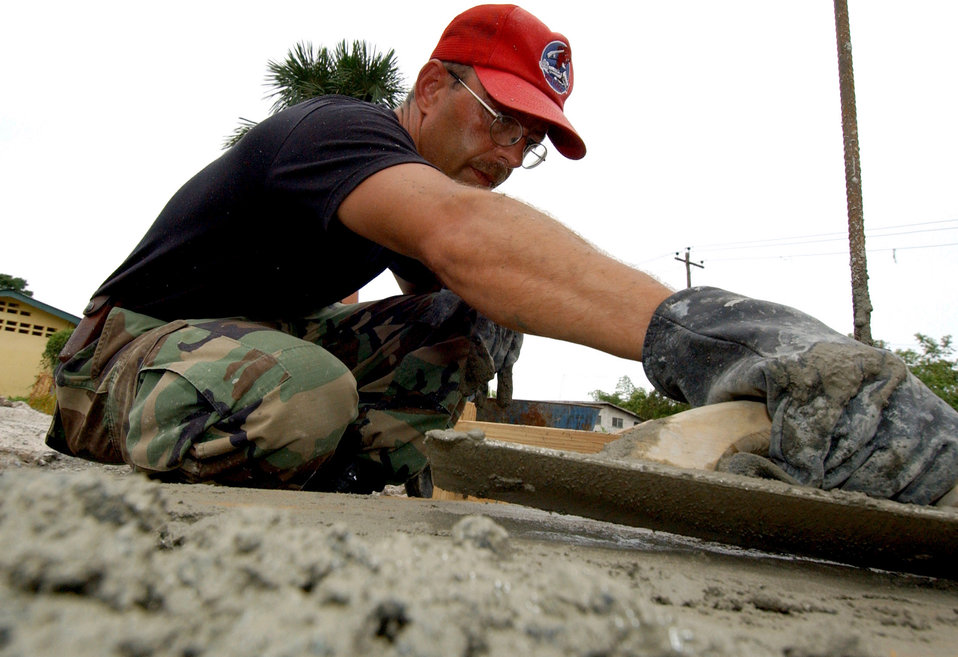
Smoothing it out

TIMEHRI, Republic of Guyana -- Tech. Sgt. Charles Ruggles smooths concrete for a new school house here July 7 in support of exercise New Horizons 2004. During this four-month exercise, a combined team of Guyana defense forces and U.S. military personnel will engage in construction projects and medical training activities which directly benefit the local community. Sergeant Ruggles is a member of the 5th Medical Operations Squadron at Minot Air Force Base, N.D.